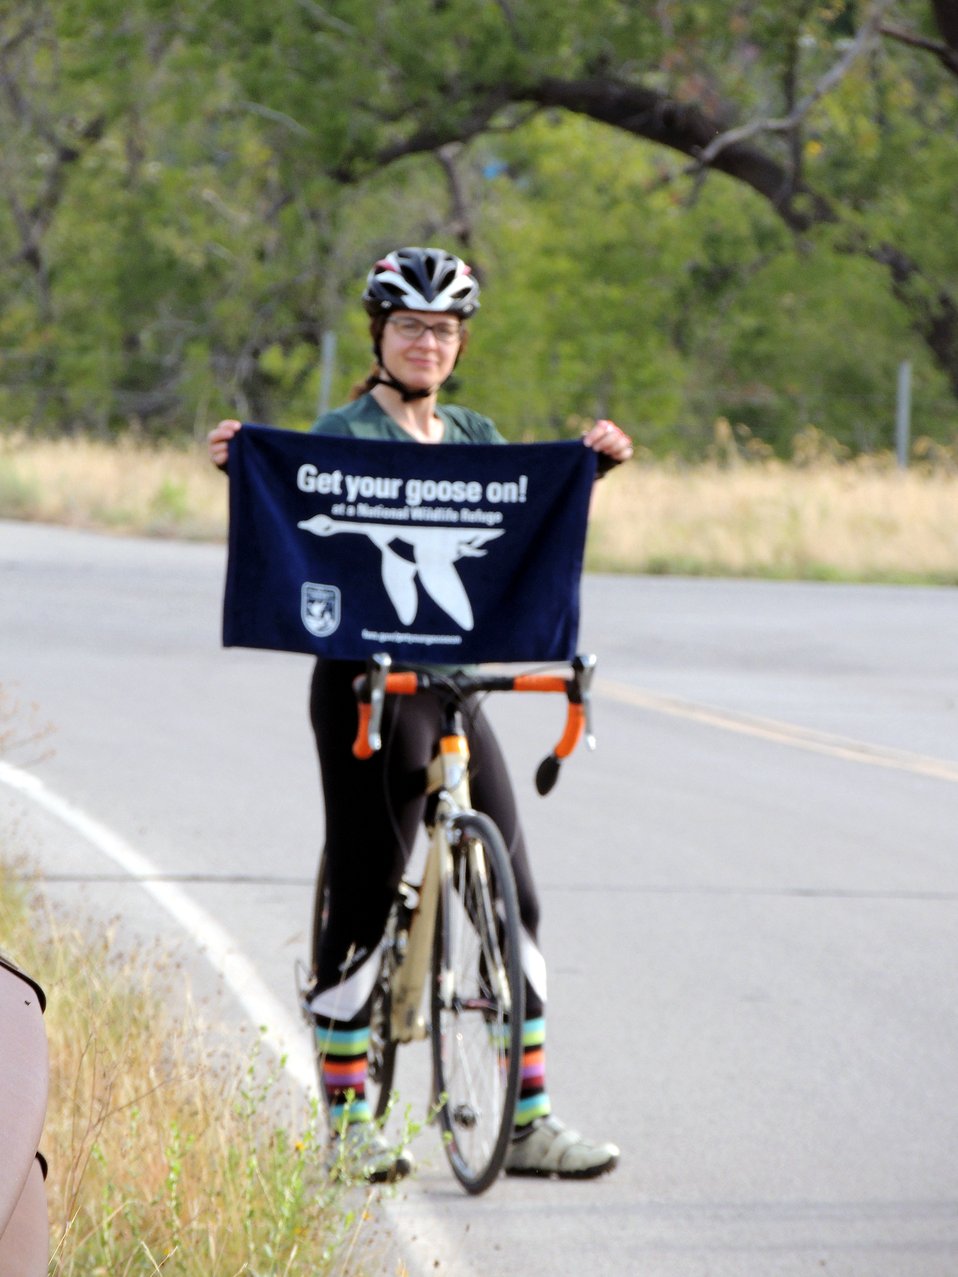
Get Your Goose On!

Wichita Mountains National Wildlife Refuge in Oklahoma.